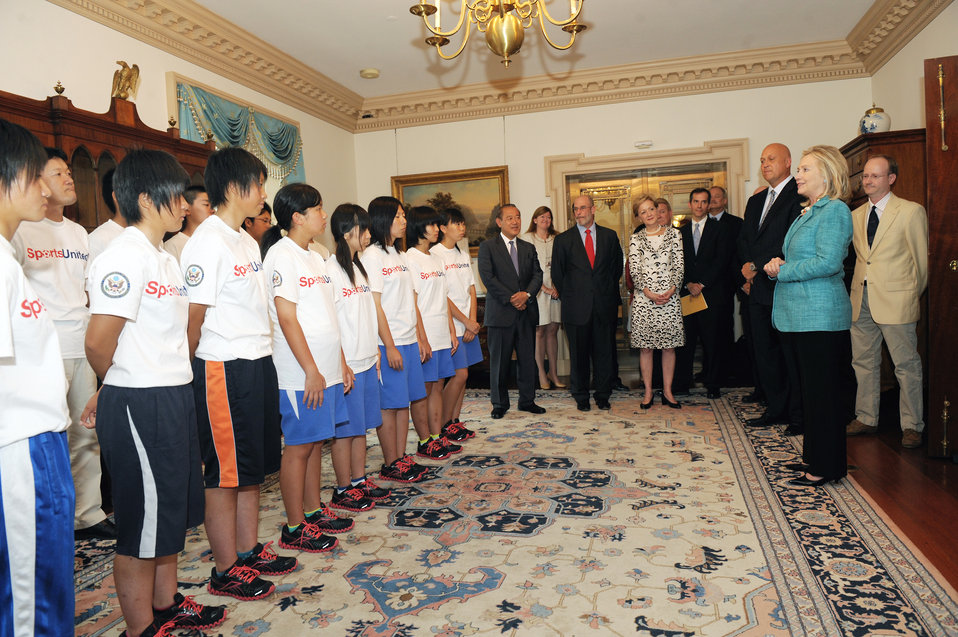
Secretary Clinton Meets With MLB Hall of Famer Cal Ripken, Jr., Japanese Youth Baseball and Softball Players, and Four Coaches

U.S. Secretary of State Hillary Rodham Clinton meets with Major League Baseball Hall of Famer Cal Ripken, Jr., 16 Japanese youth baseball and softball players, and four coaches participating in the U.S. Department of State’s first international sports exchange with Japan, at the U.S. Department of State in Washington, D.C., on August 9, 2011.